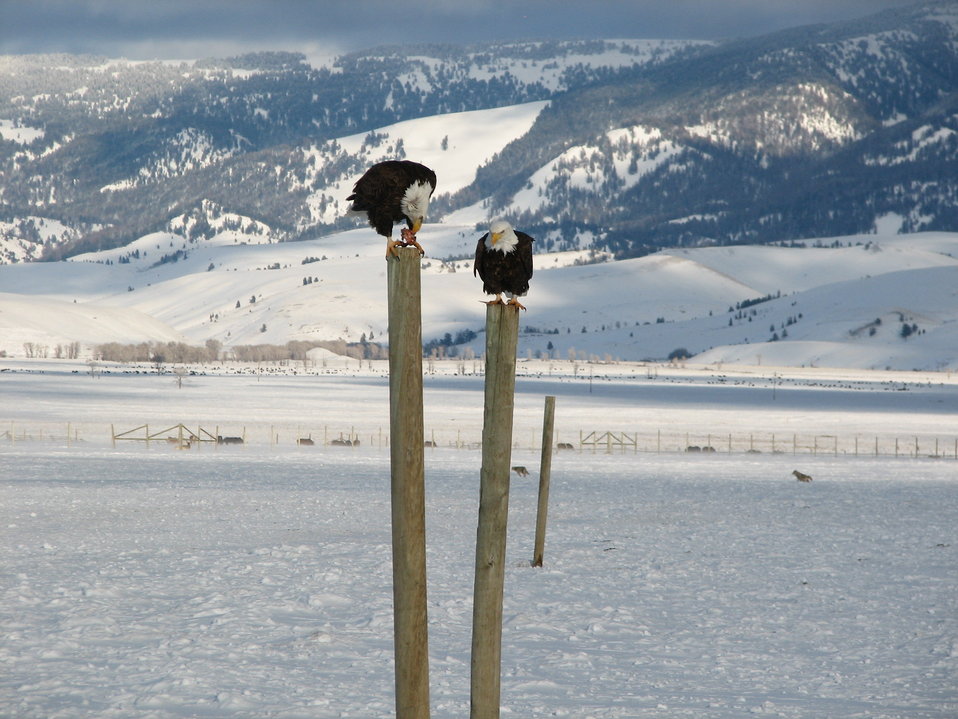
I'll Have What He's Having

A bald eagle sits atop a post eating a meal while another eagle looks on.